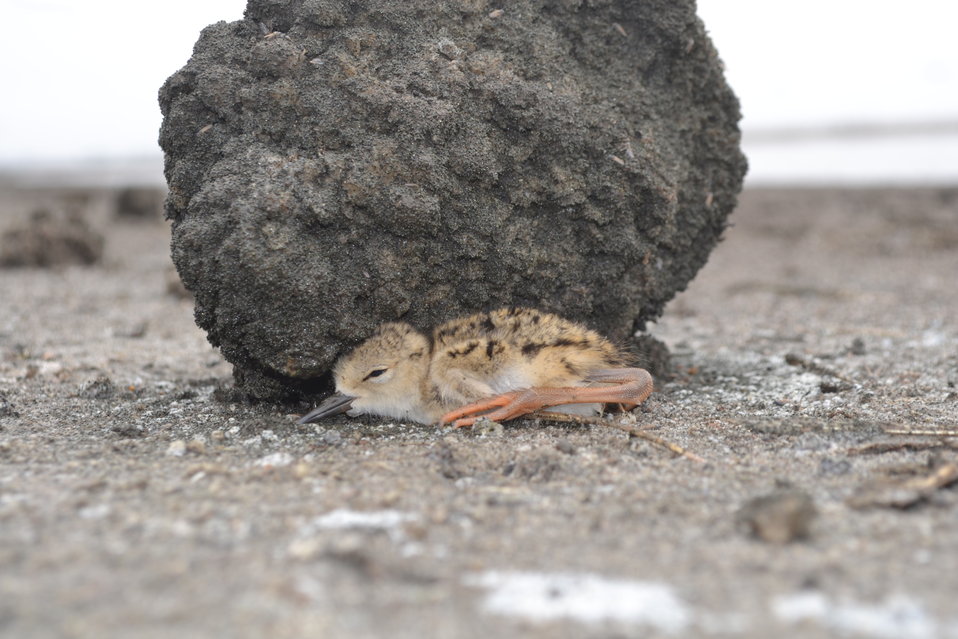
A hiding American avocet (Recurvirostra americana) chick

It takes a lot of work to walk around on the sticky bay mud, so this little chick is taking a break, while also hiding from predators